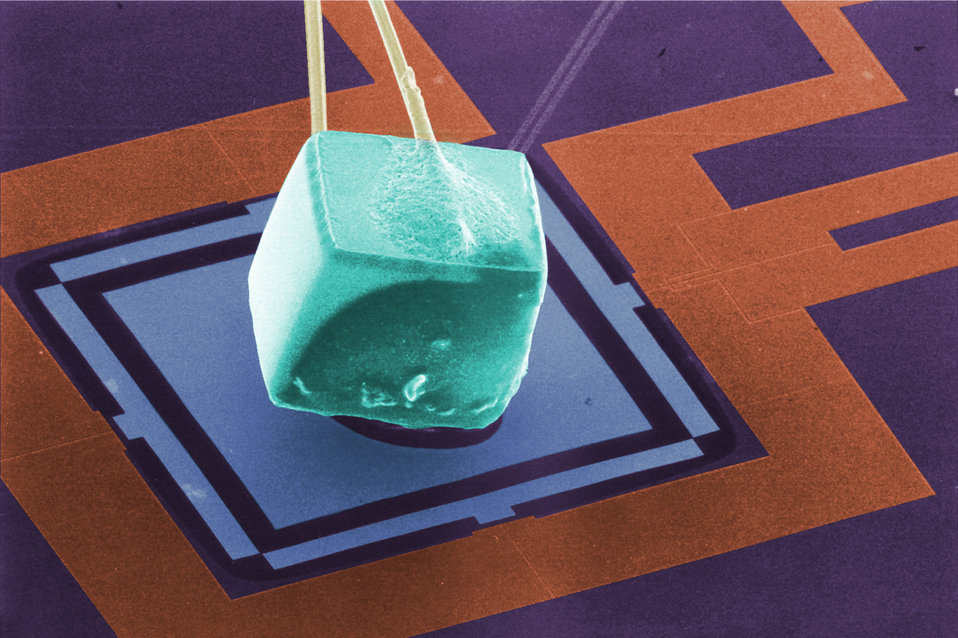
Cube of Germanium

This colorized scanning electron micrograph shows a cube of germanium attached to a membrane. The four small light blue rectangles at the midpoints of the membrane perimeter are chip-scale refrigerators that cooled the cube and membrane to only a few hundred thousandths of a degree above absolute zero.